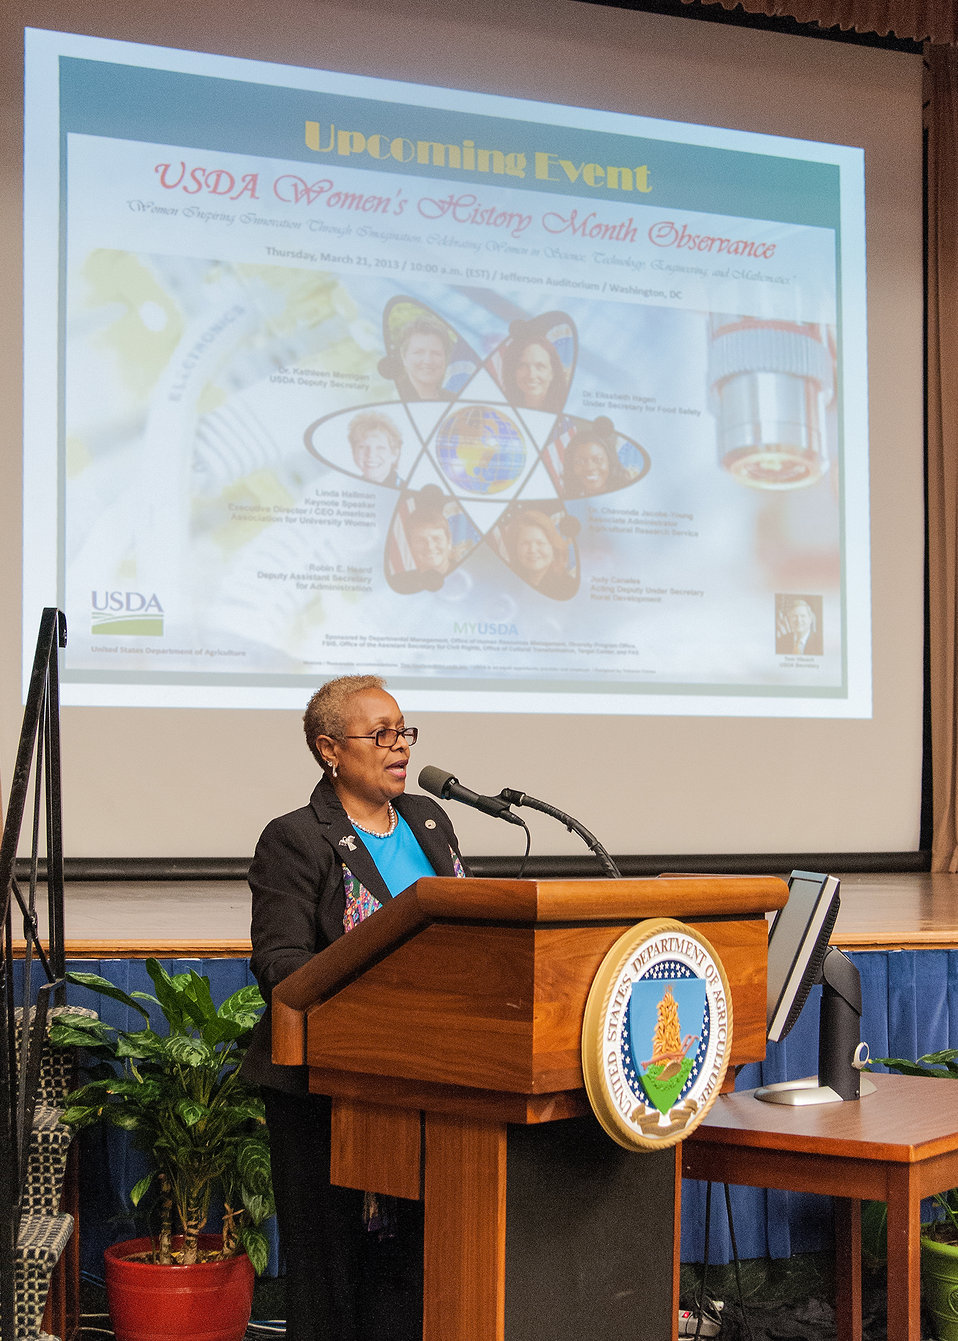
U.S. Department of Agriculture (USDA) Office of the Assistant Secretary for Civil Rights, Compliance Division Chief Geraldine Herring discusses the role of the Office of Civil Rights at the First Annual All Hands Special Emphasis Program Managers (SEPM) Meeting at the U.S. Department of Agriculture Jefferson Auditorium in Washington, D.C. on Wednesday, Mar. 13, 2013.